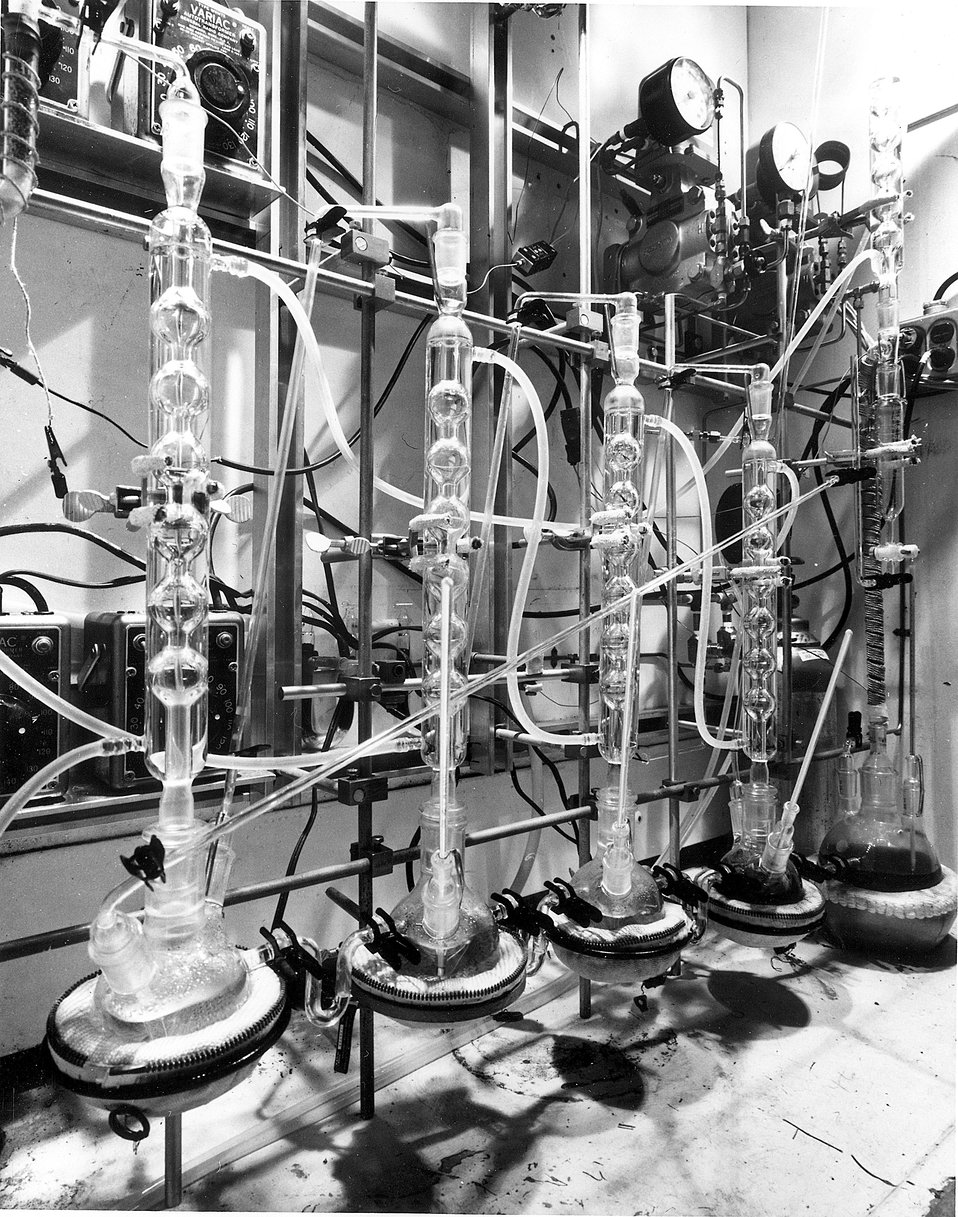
In line with minimizing the release of radionuclides to the environment, highly efficient procedures are being developed for removing radioactive fission products from liquid and gaseous plant effluents. c. 1972